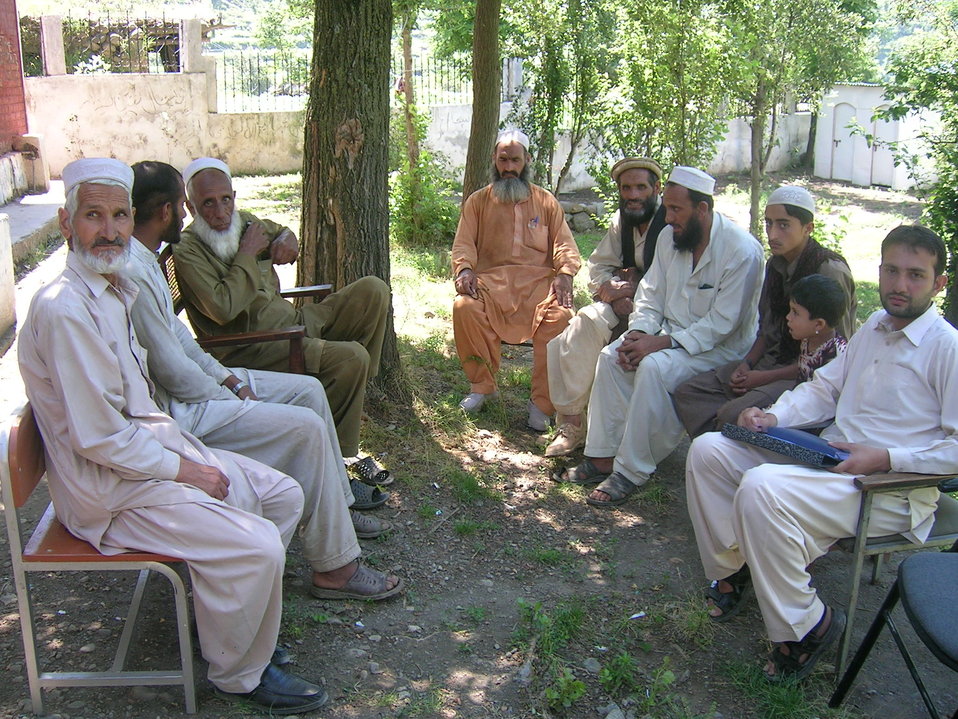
A meeting for formation of Quality Improvement Team (QIT) in BHU Tormung Shangla

Quality Improvement Teams are formed at each BHU and RHC. These committees discuss issues of health facilities and find solution